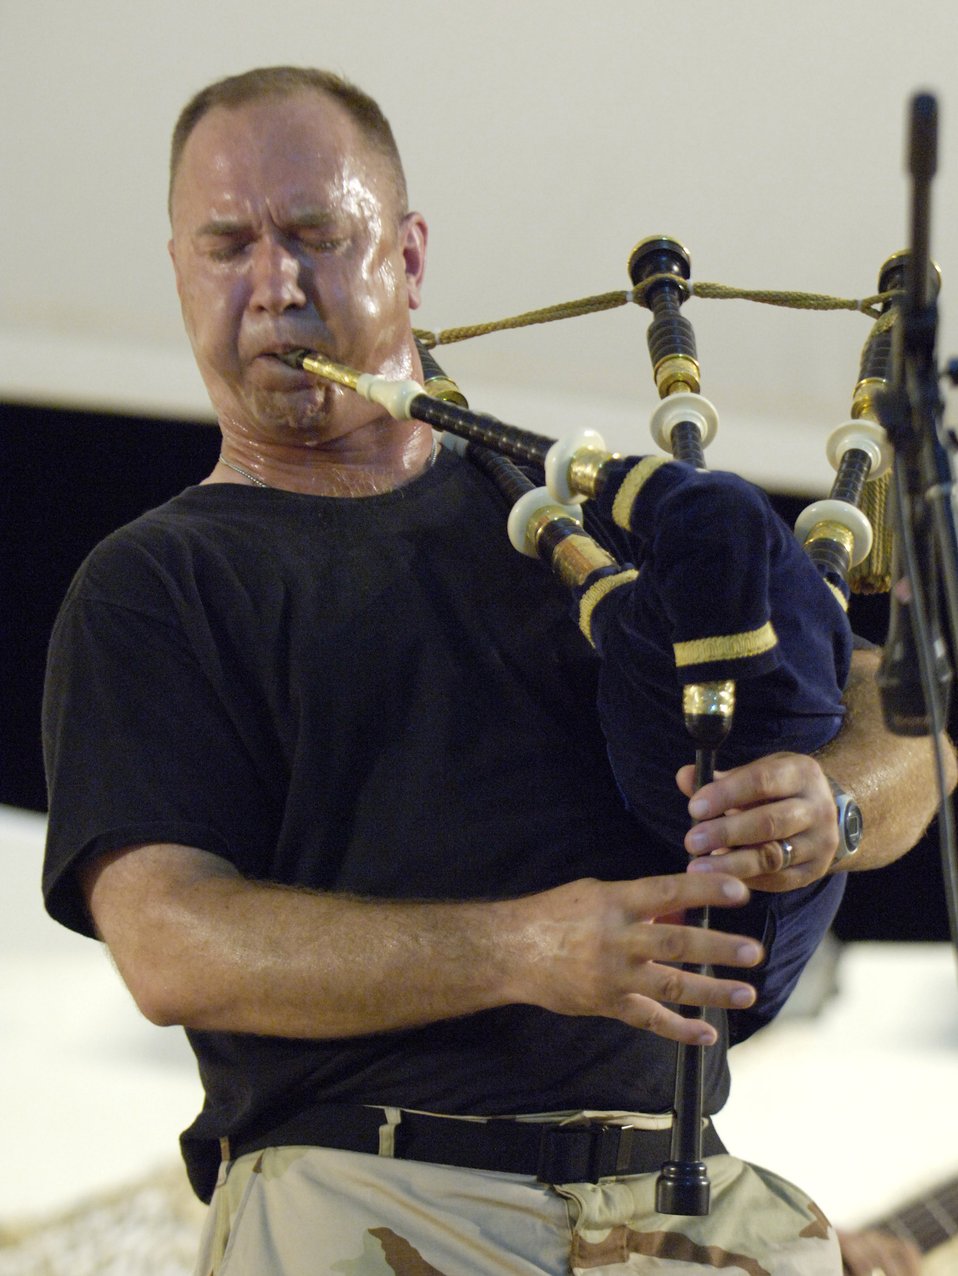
Expeditionary band performs for troops in Southwest Asia

Master Sgt. Scott Gunn of the U.S. Central Air Forces Expeditionary Band